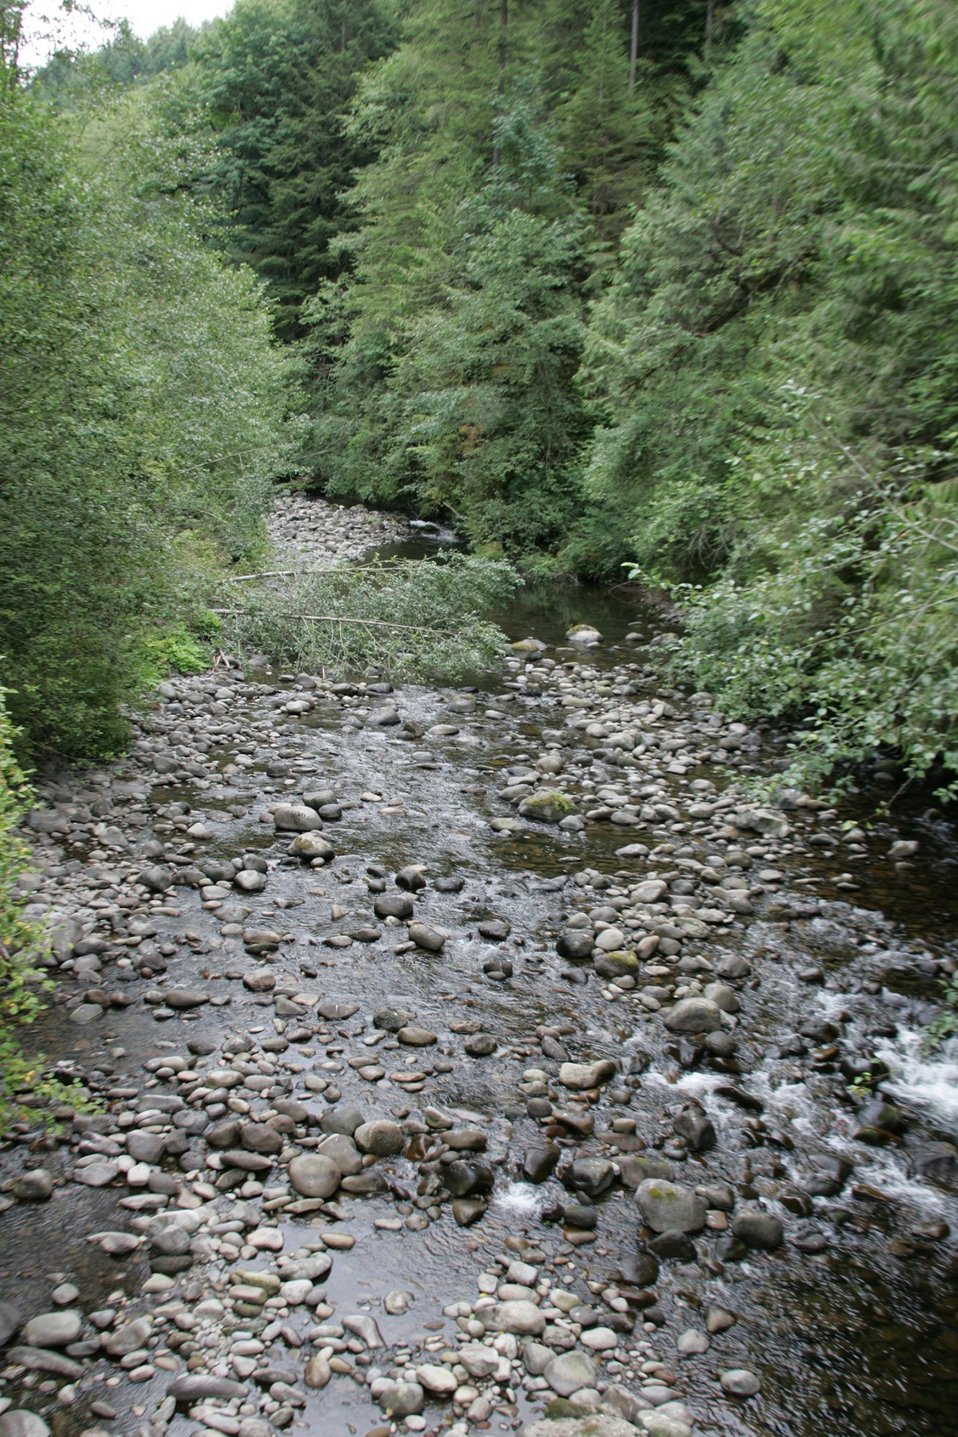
Little Sandy River above Little Sandy Dam.